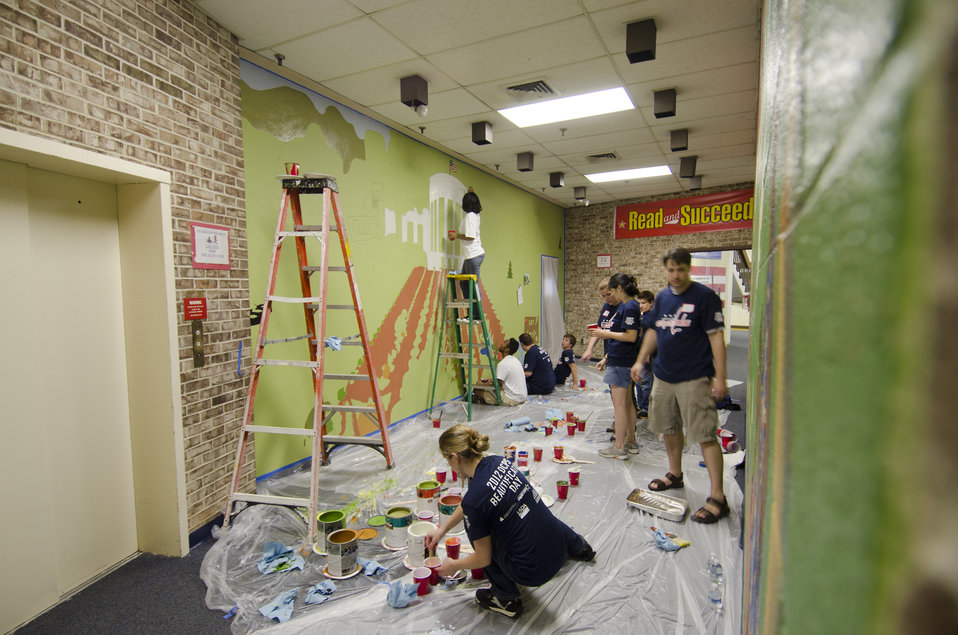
U.S. Department of Agriculture (USDA) People’s Garden Executive Master Gardeners, friends, and family, along with Washington Capitals fans are volunteering in District of Columbia Public Schools’ (DCPS) Beautification Day, on Saturday, August 25, 2012, at Thurgood Marshall Elementary School, in Washington, D.C. Each year people are invited to help “spruce up” public school facilities in preparation for the first day of school. More than 70 volunteers pitched in at this large school facility. The People’s Garden effort involves building and painting raised planter boxes, then preparing the soil mixture so they are “ready to grow.” Additionally, a team that includes descendants of U.S. Supreme Court Justice Thurgood Marshall assembles a prefabricated garden toolshed. The Justice’s son, John Marshall leads the team, which includes Brianna the Justice’s great-grand daughter in one of many multi-generational efforts at this school today. Washington Capitals Forward Mike Riberio, his family and mascot Slapshot participated in every project underway at Marshall School. From the outside gardens, to inside mural painting, and robotics worktable construction, the teams made their goals.